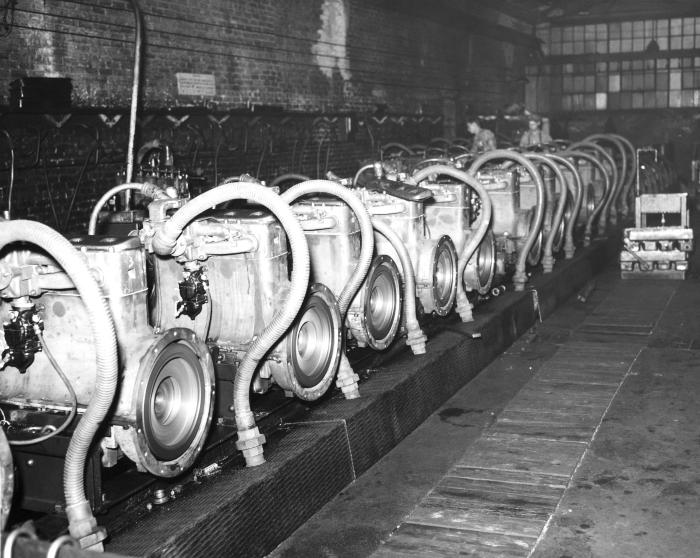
This historical 1947 photograph was provided by the Center for Disease Control's (CDC), National Institute for Occupational Safety and Health (NIOSH). It depicted an indoor array of combustion engines that were in the process of being performance tested at the Pacific Car & Foundry Co., Renton, Washington. The exhaust produced by these engines had to be removed through a ventilation system, to which each engine was engaged by way of corregated hoses connecting each engine's block manifold to the exhaust system. There was a time when the exhaust from these motors was not extracted properly, leading to many workers falling ill to the excessive carbon monoxide concentrations in the atmosphere.